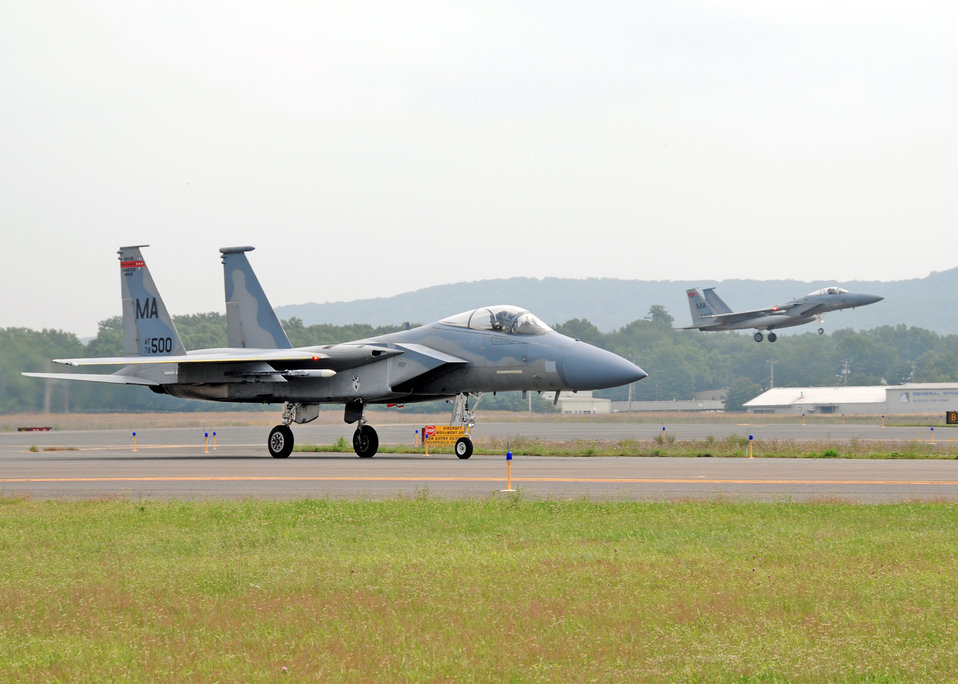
F-15 Eagles from the Massachusetts Air National Guard's 104th Fighter Wing fly training missions from Barnes Air National Guard Base in Westfield, Mass., in preparation for Exercise RED FLAG.